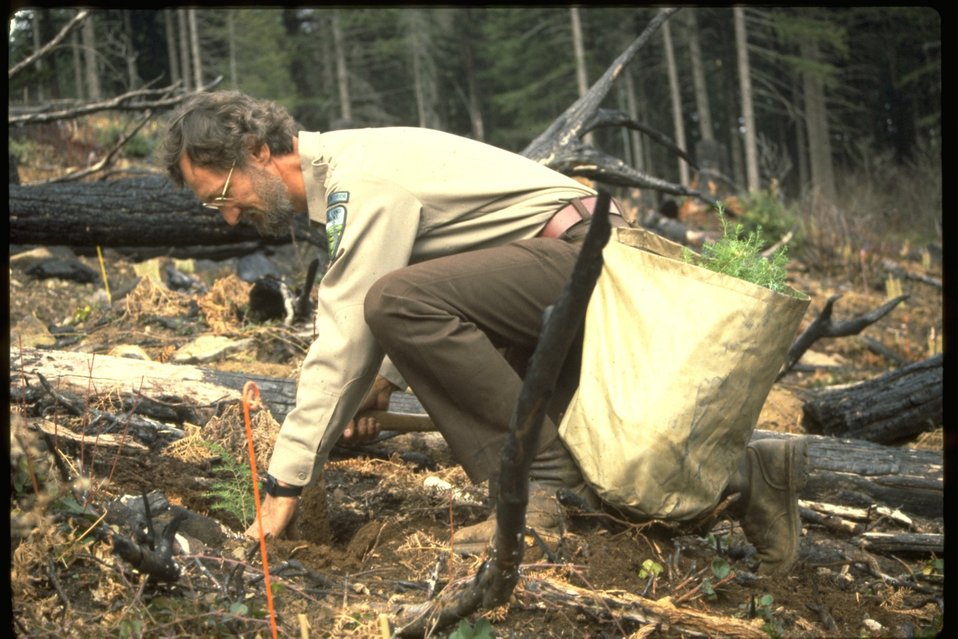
Ed Sanvi is tree planting in a clear cut area.